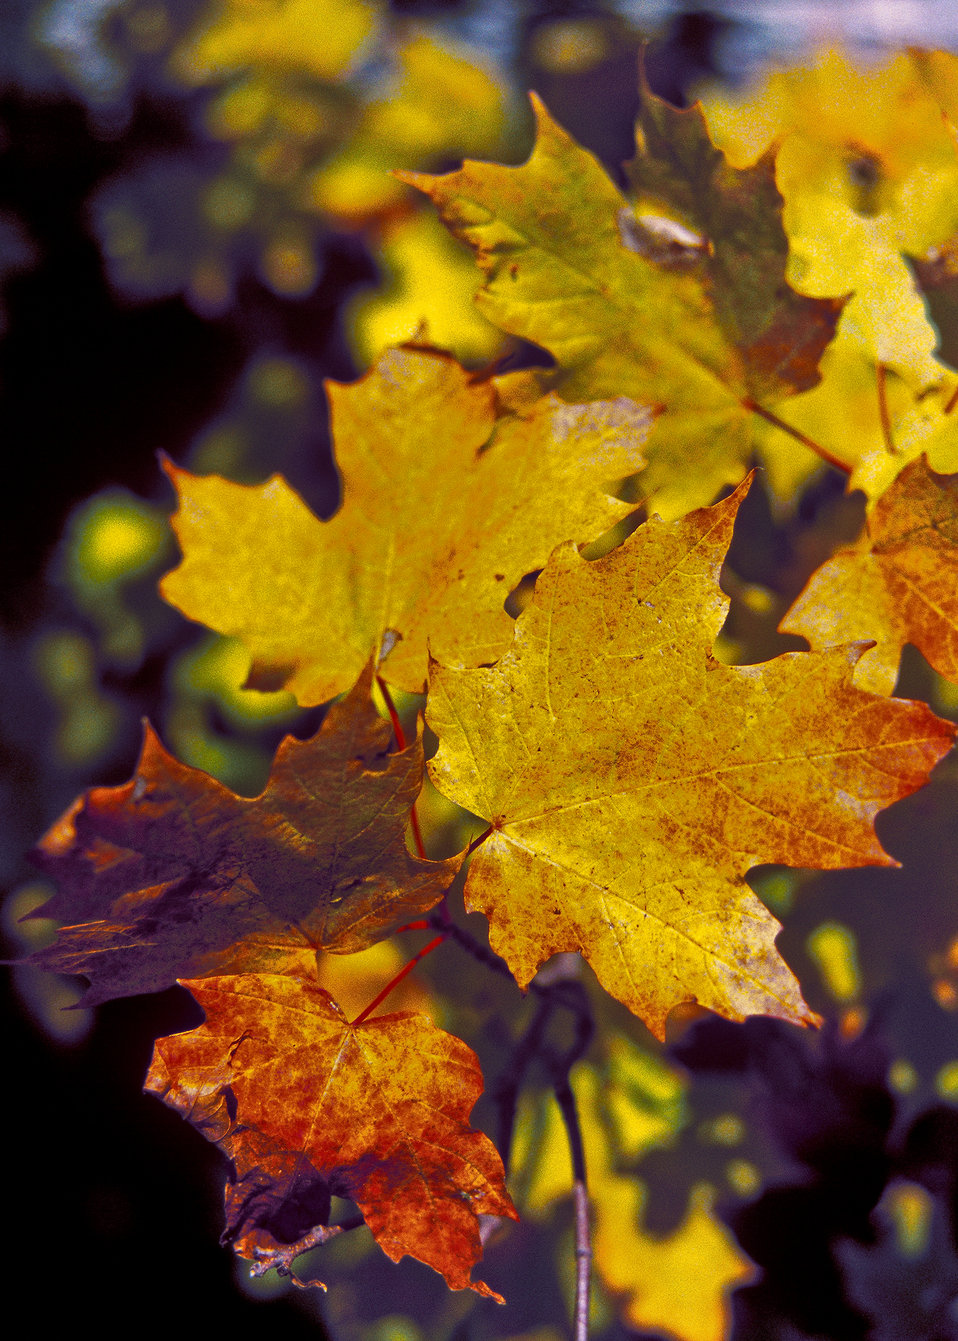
Maple leaves of many colors offer an unending palette of color in the Hiawatha National Forest on the Upper Peninsula of Michigan.